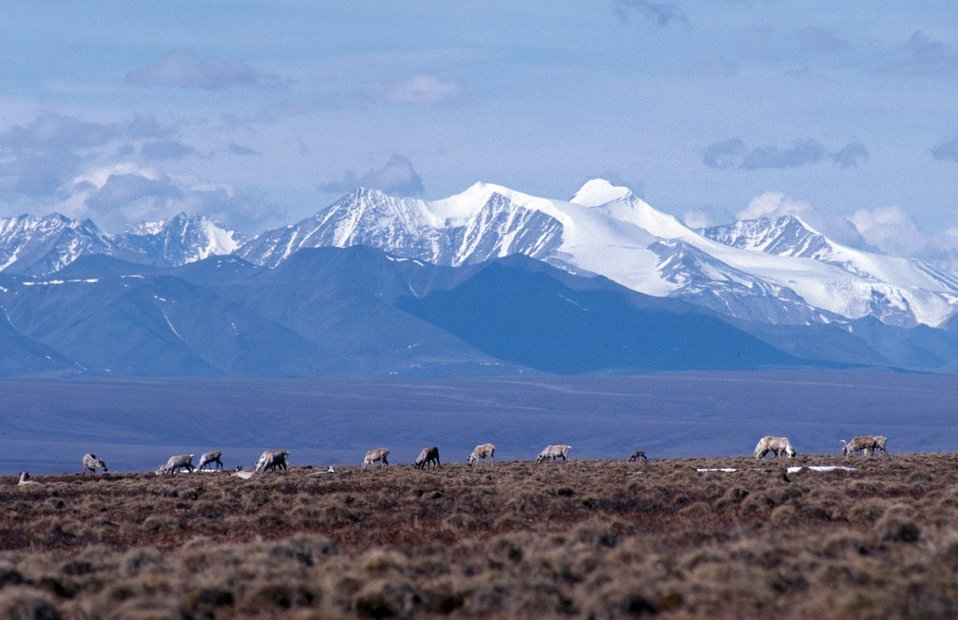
1002 Area: Caribou with mountain backdrop

Caribou on the 1002 Area of the Arctic Refuge coastal plain, with the Brooks Range mountains in the background to the south.